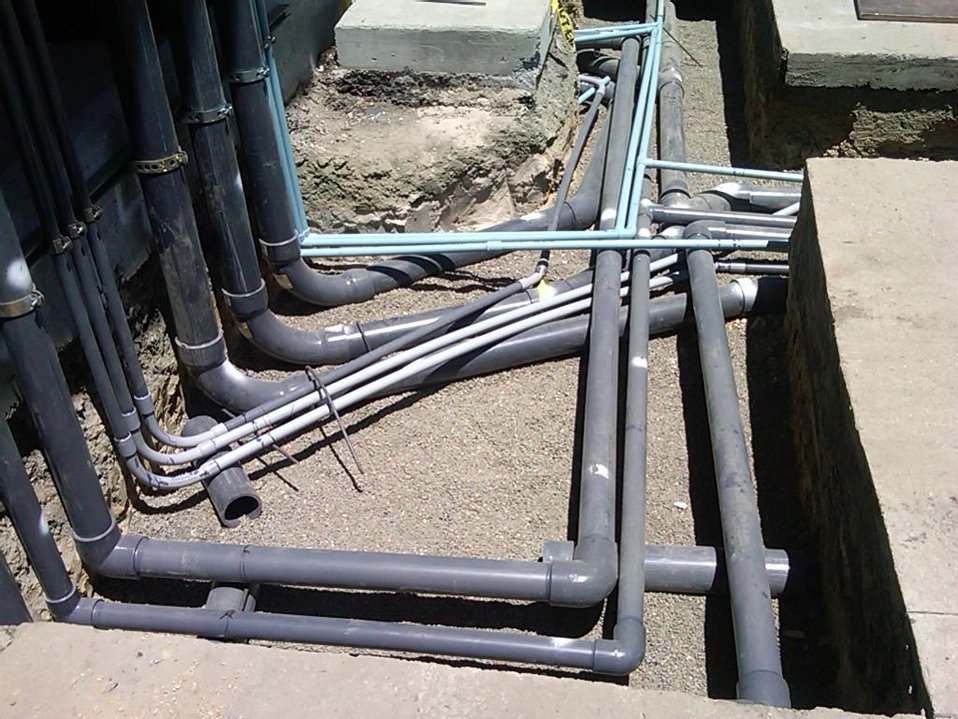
Recovery Act Supports Soil and Debris Cleanup, Groundwater Treatment at SLAC

Recovery Act workers are on track to remove more than 30,000 cubic yards of contaminated soil and debris at the SLAC National Accelerator Laboratory by September 2011.
The Recovery Act invested $14.3 million in legacy cleanup activities at SLAC. In addition to removing contaminated soil and debris that is shipped to local disposal facilities, Recovery Act workers installed three new groundwater treatment systems.